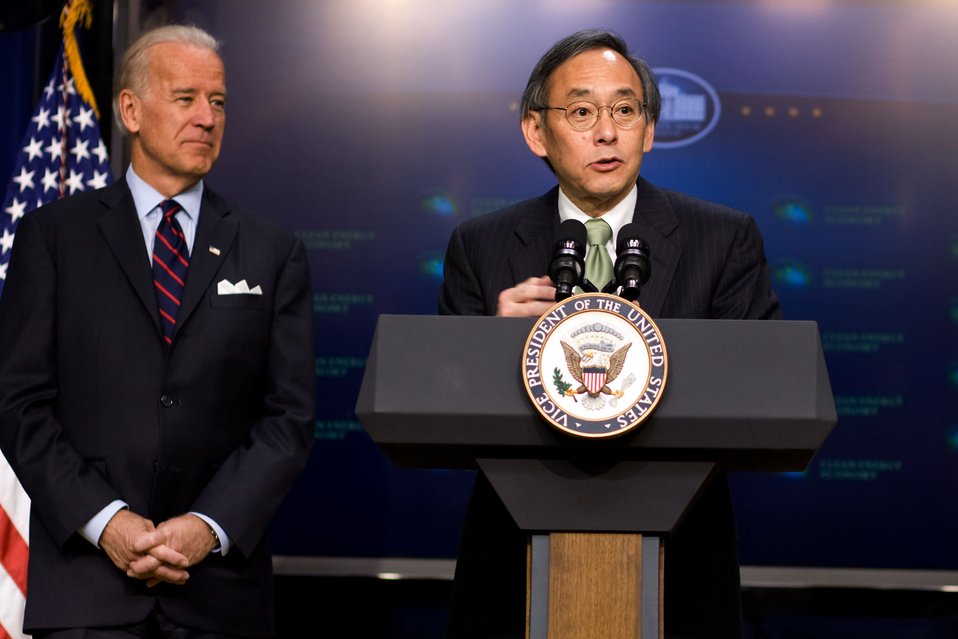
V042110DL-0052edit

Secretary of Energy Steven Chu introduces Vice President Joe Biden during an earth day kickoff event in the South Court Auditorium at the White House, April 20, 2010.